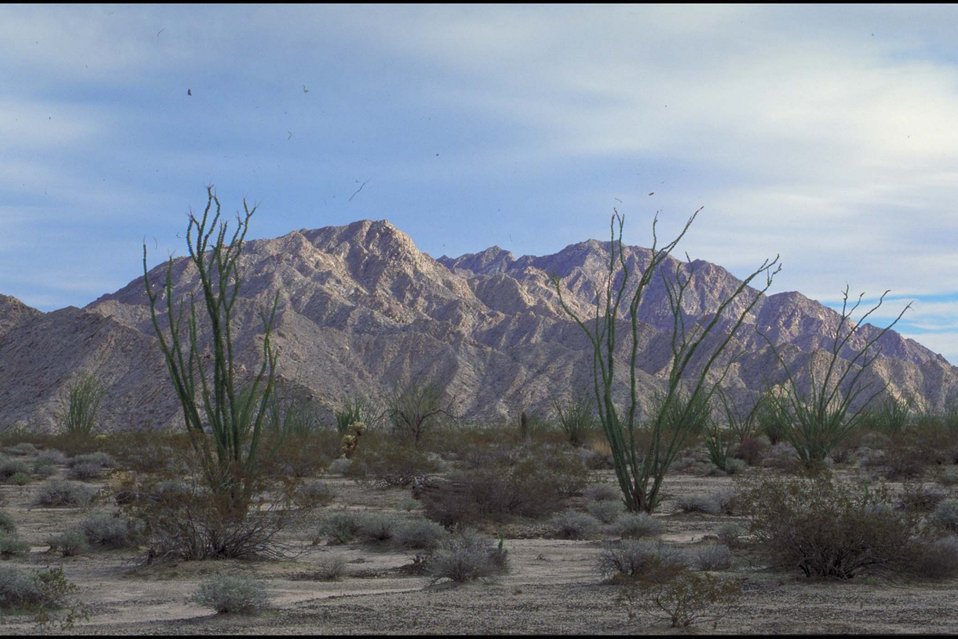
Beautiful ocotillas against a majestic mountain background